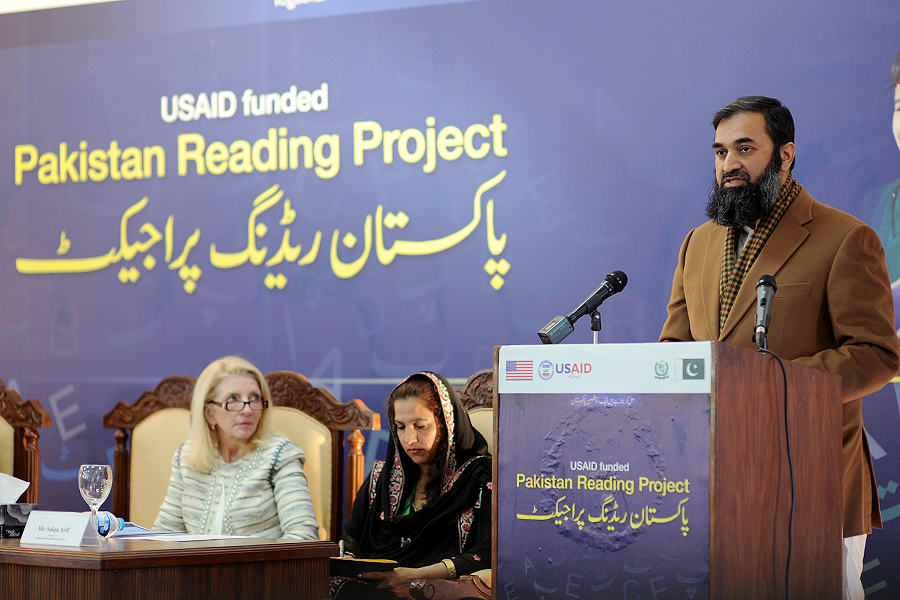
United States and Pakistan Launch the Pakistan Reading Project